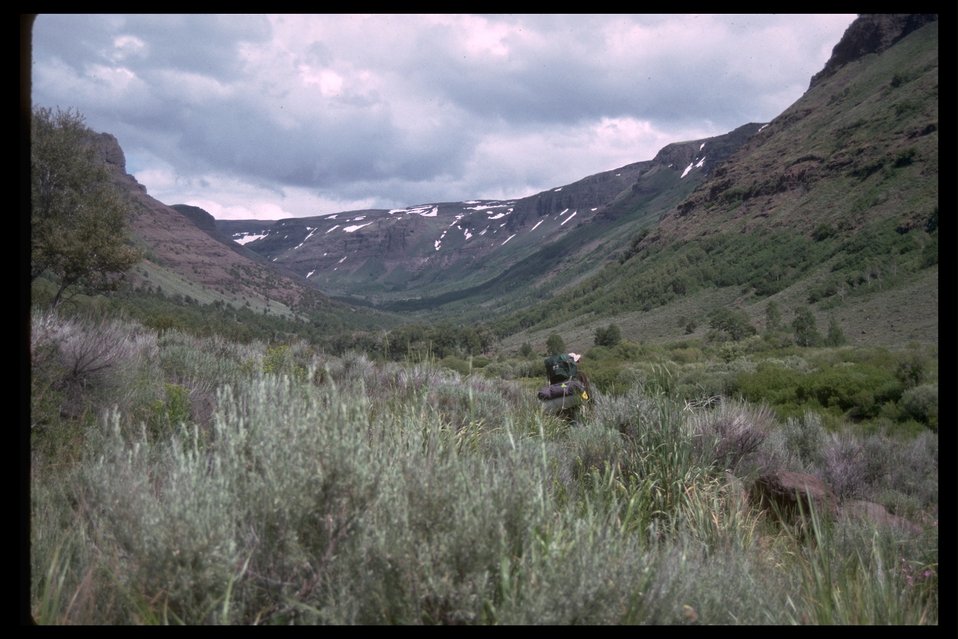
Little Blitzen Gorge from canyon floor looking east with hiker hiking through canyon. (WSA 2-86F)